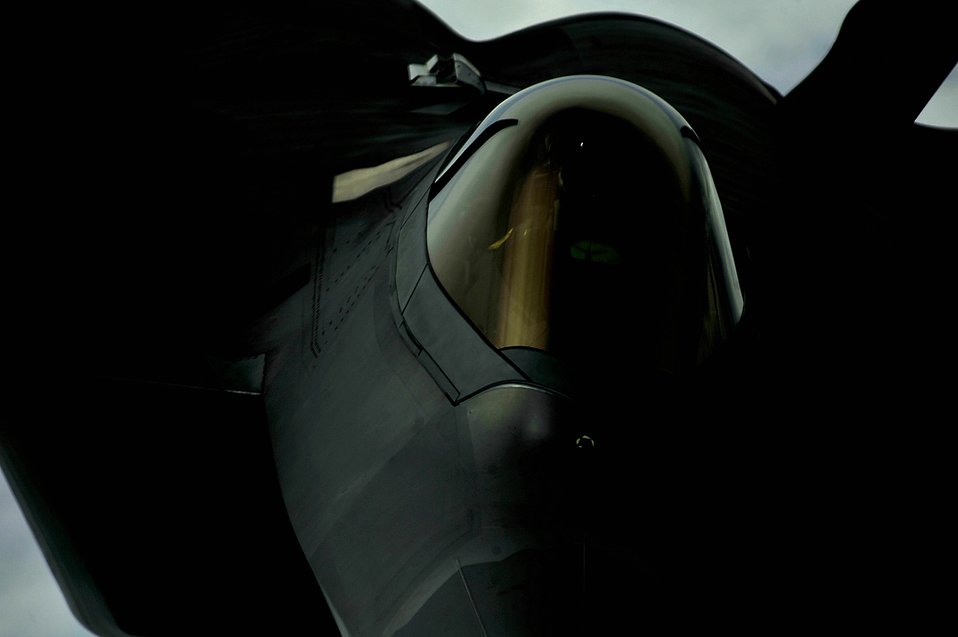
F-22 Raptor

A 1st Fighter Wing's F-22 Raptor from Joint Base Langley-Eustis, Va. pulls into position to accept fuel from a KC-135 Stratotanker with the 756th Air Refueling Squadron, Joint Base Andrews Naval Air Facility, Md. off the east coast on May 10, 2012. The first Raptor assigned to the Wing arrived Jan. 7, 2005. This aircraft was allocated as a trainer, and was docked in a hanger for maintenance personnel to familiarize themselves with its complex systems. The second Raptor, designated for flying operations, arrived Jan. 18, 2005. On Dec. 15, 2005, Air Combat Command commander, along with the 1 FW commander, announced the 27th Fighter Squadron as fully operational capable to fly, fight and win with the F-22. (U.S. Air Force Photo by: Master Sgt. Jeremy Lock)